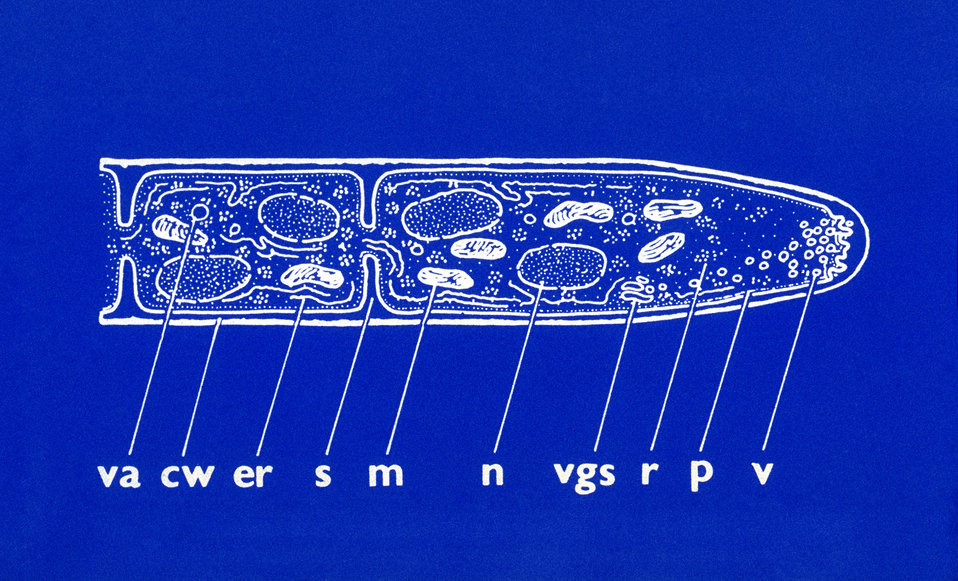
This illustration depicted some of the ultrastructural components found at the hyphal tip of a fungal organism.